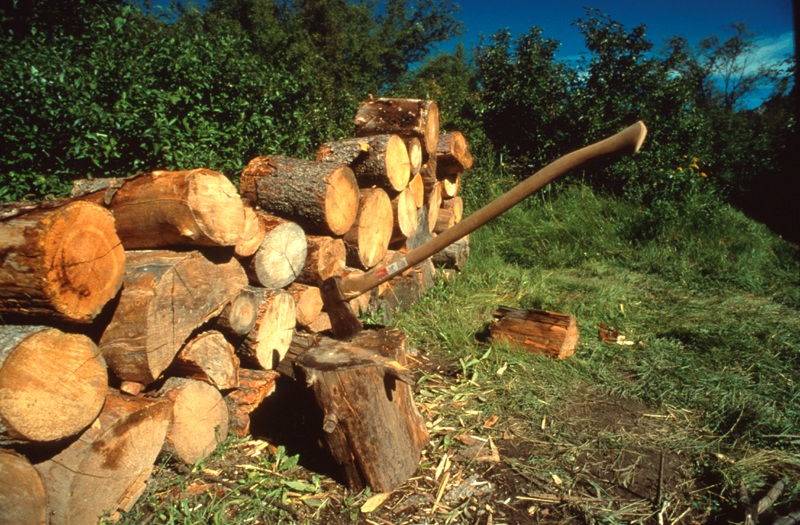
South Fork of the Snake River